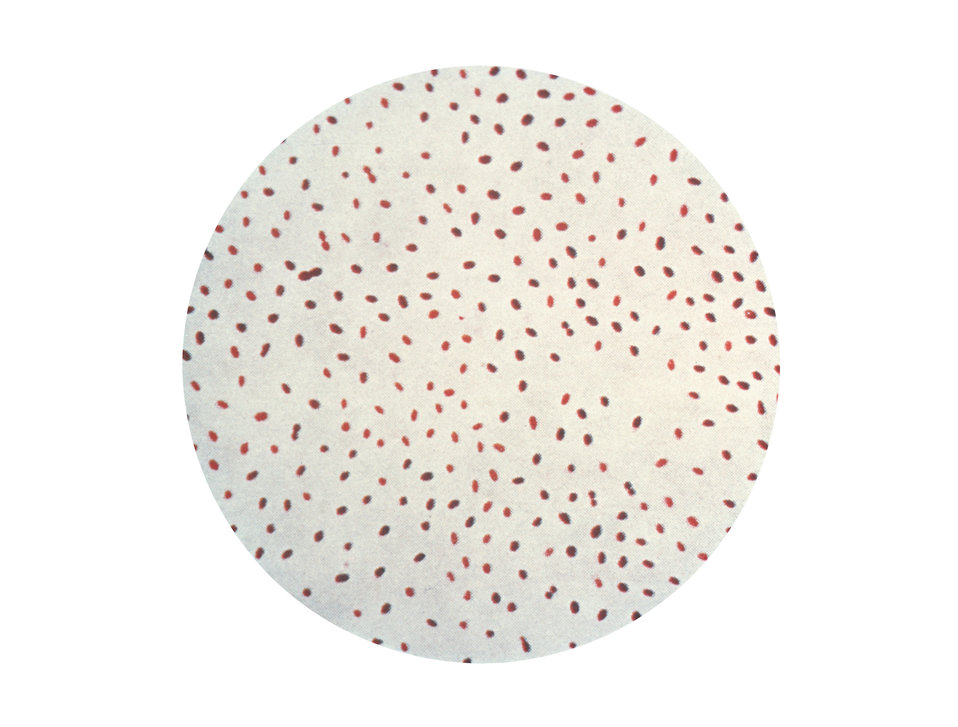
A photomicrograph of the bacterium Brucella melitensis, initially named Micrococcus melitensis.